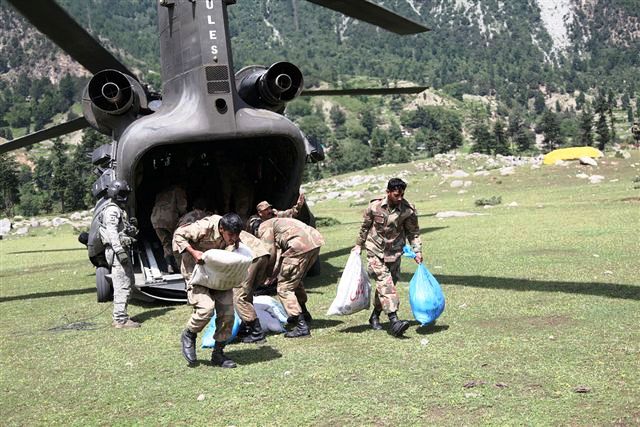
Members of the Pakistan Military Unload Sacks of Grain from a U.S. Army Helicopter

Members of the Pakistan military unload sacks of grain from the back of a U.S. Army Chinook (CH-47) helicopter to be delivered as part of the disaster relief effort to help flood victims from Khyber Pakhtunkhwa Province (formerly North West Frontier Province), Pakistan, on August 5, 2010.